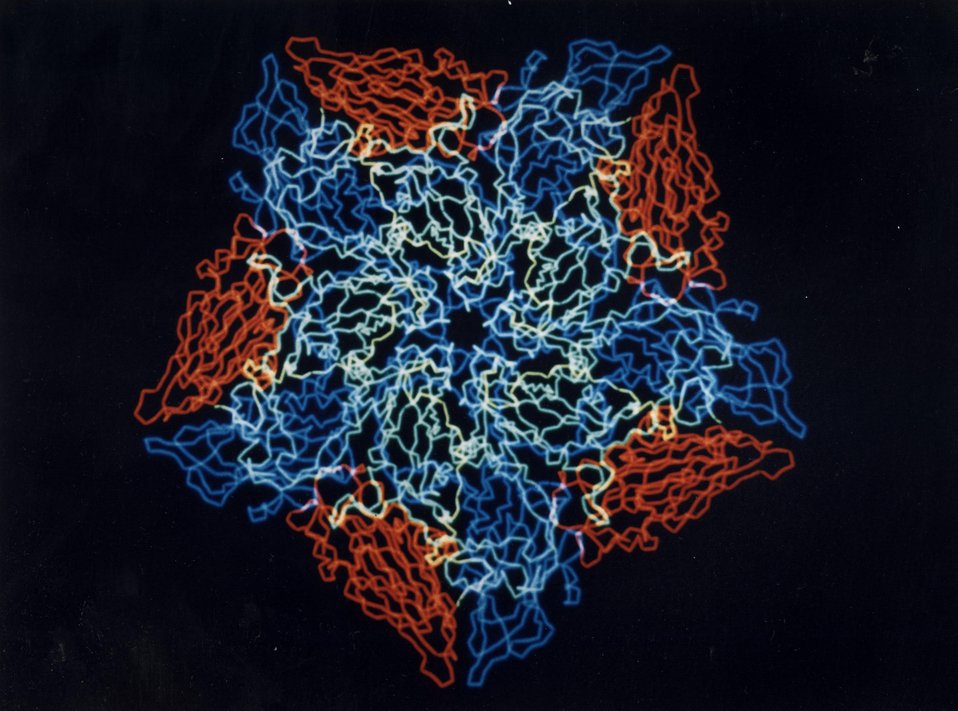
The Many Faces of Cold Virus HRV14. The protein coat of the human rhinovirus HRV14 is composed of 12 'pentameter caps,' each containing five copies of the three coat proteins, VP1, VP2, ans VP3. The computer reconstruction shown here illustrate one of these fivefold-symetric units, with red, green, and blue used to denote the three constituent proteins.